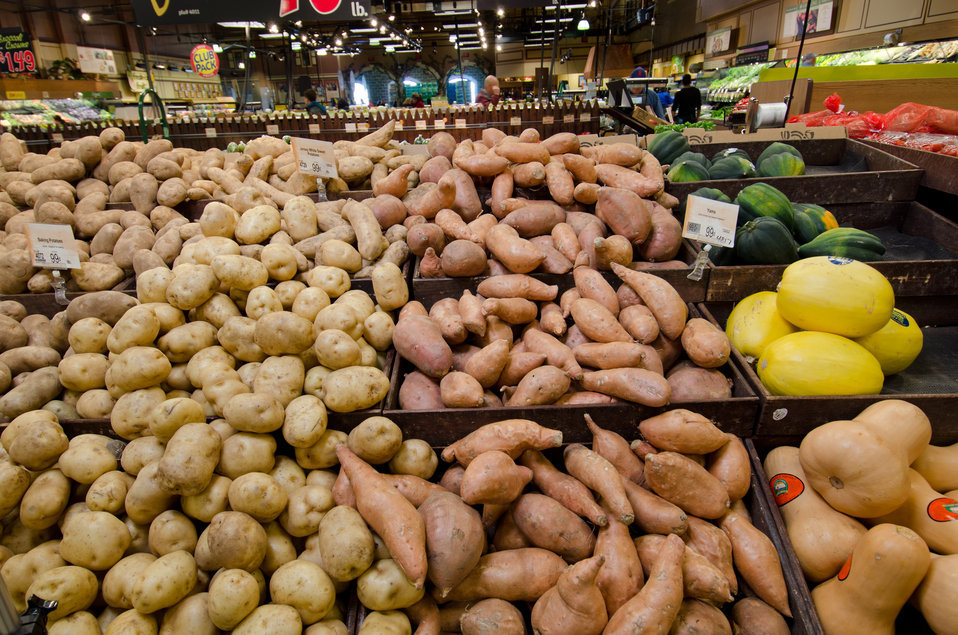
Potatoes in the produce section at a grocery store in Fairfax, Virginia, on March 3, 2011.